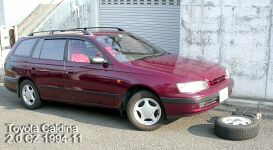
1994 Toyota Caldina wagon, photo taken 2005-08 by owner for selling